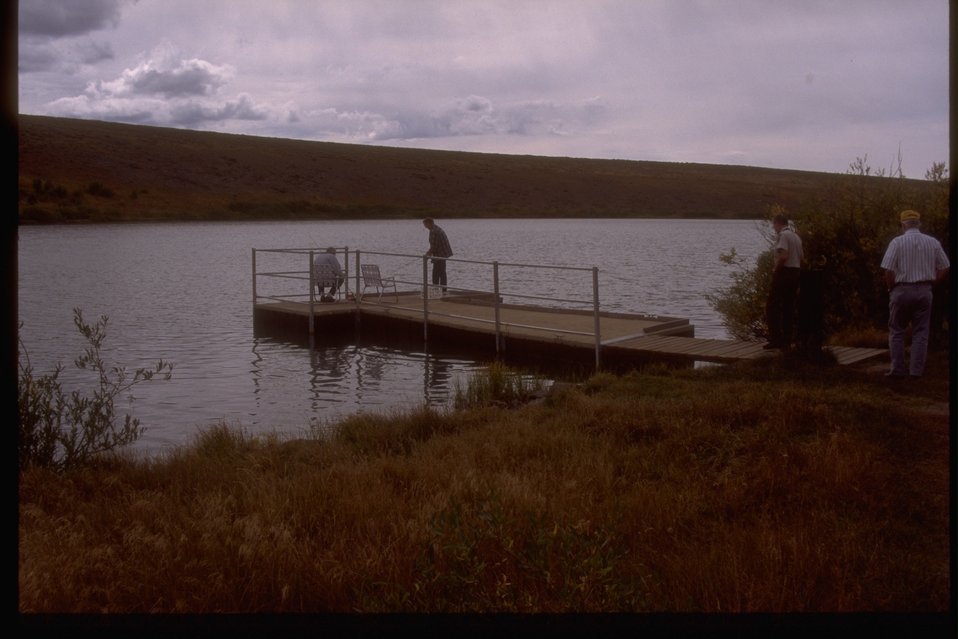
Fish Lake near Steens Mountain.